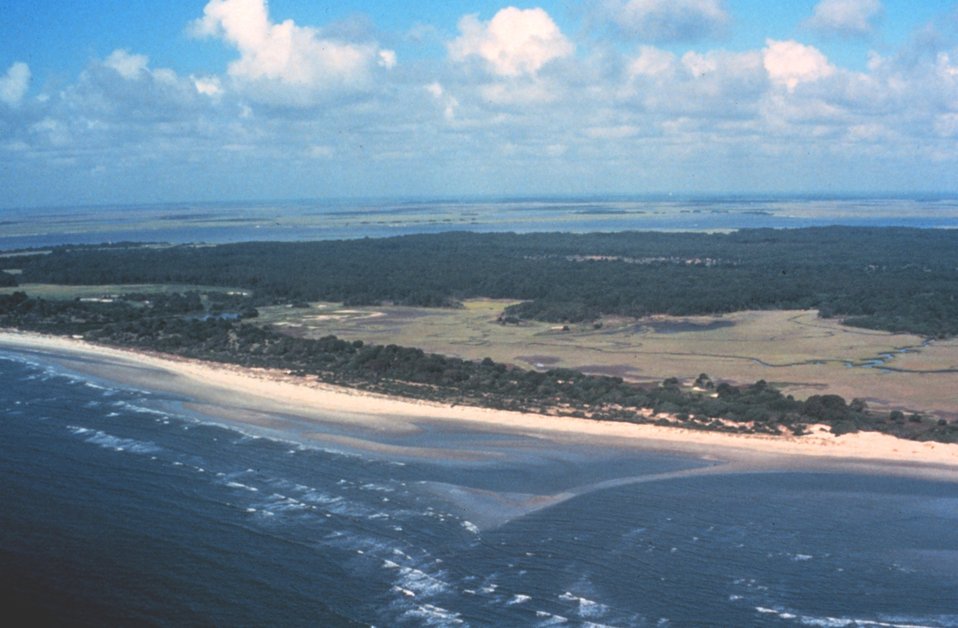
Aerial view of the south end of Sapelo Island looking toward Doboy Sound.